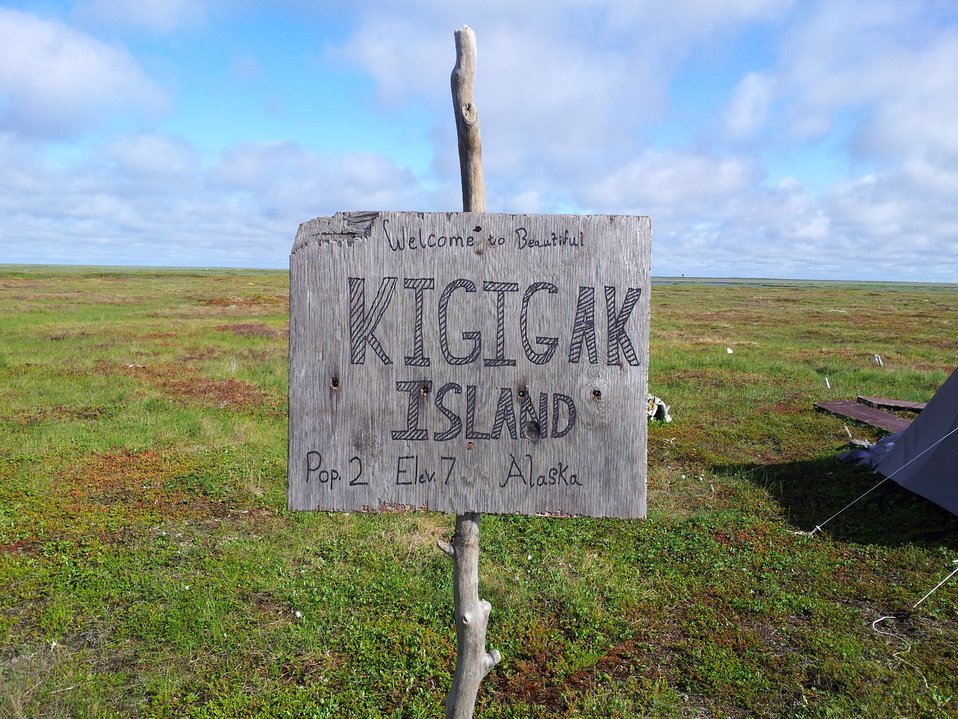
Welcome to the Island

One of the biotechs thought it would be good to have a welcome sign at camp. The only issue was the population on the island would fluctuate causing a few issues with updating the sign.

USFWS Yukon Delta NWR